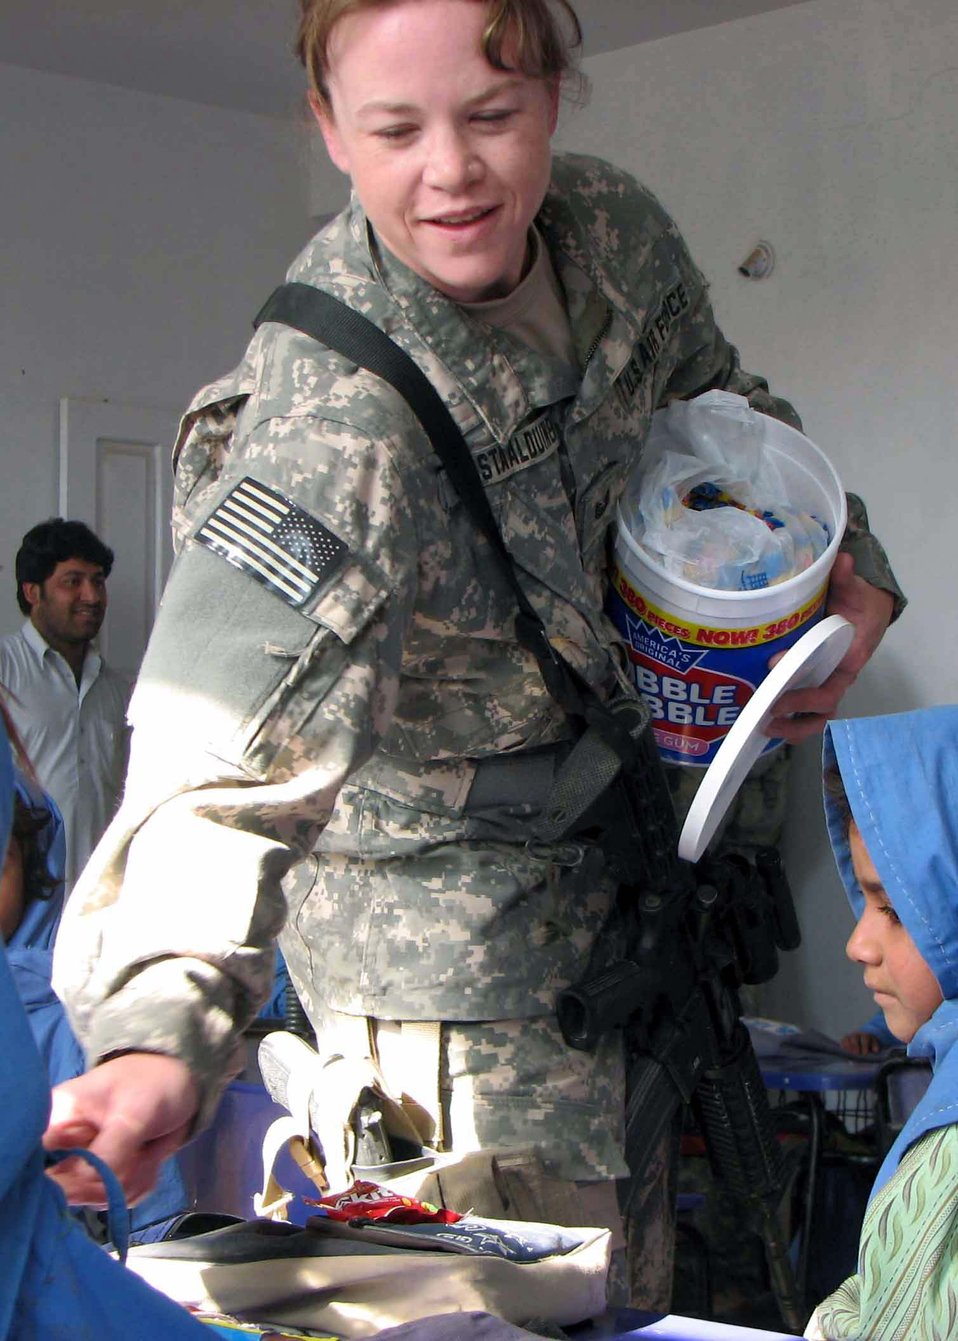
American servicemembers take reconstruction to new level

Tech. Sgt. Chandra Van Staalduinen passes out candy to children in the Hope of Mother School Nov. 8 in the Nangarhar Province of Afghanistan. She is part of the Nangarhar Provincial Reconstruction Team that is made up of Airmen and Soldiers charged with assisting the provincial government in improving security, governance and reconstruction. Sergeant Van Staalduinen is a native of Mayodan, N.C., and assigned to the 366th Communications Squadron, Mountain Home Air Force Base, Idaho.